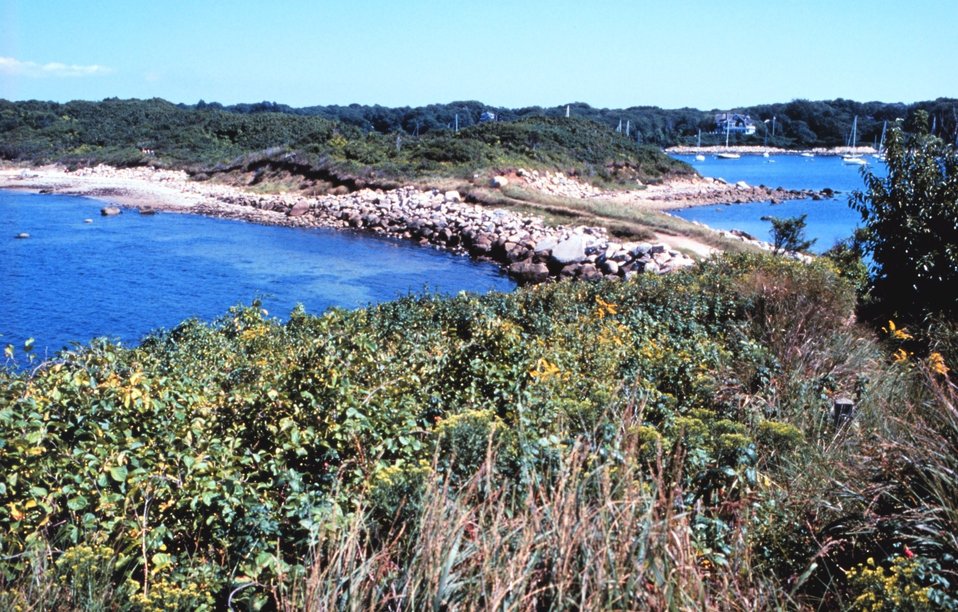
The Knob, Woods Hole